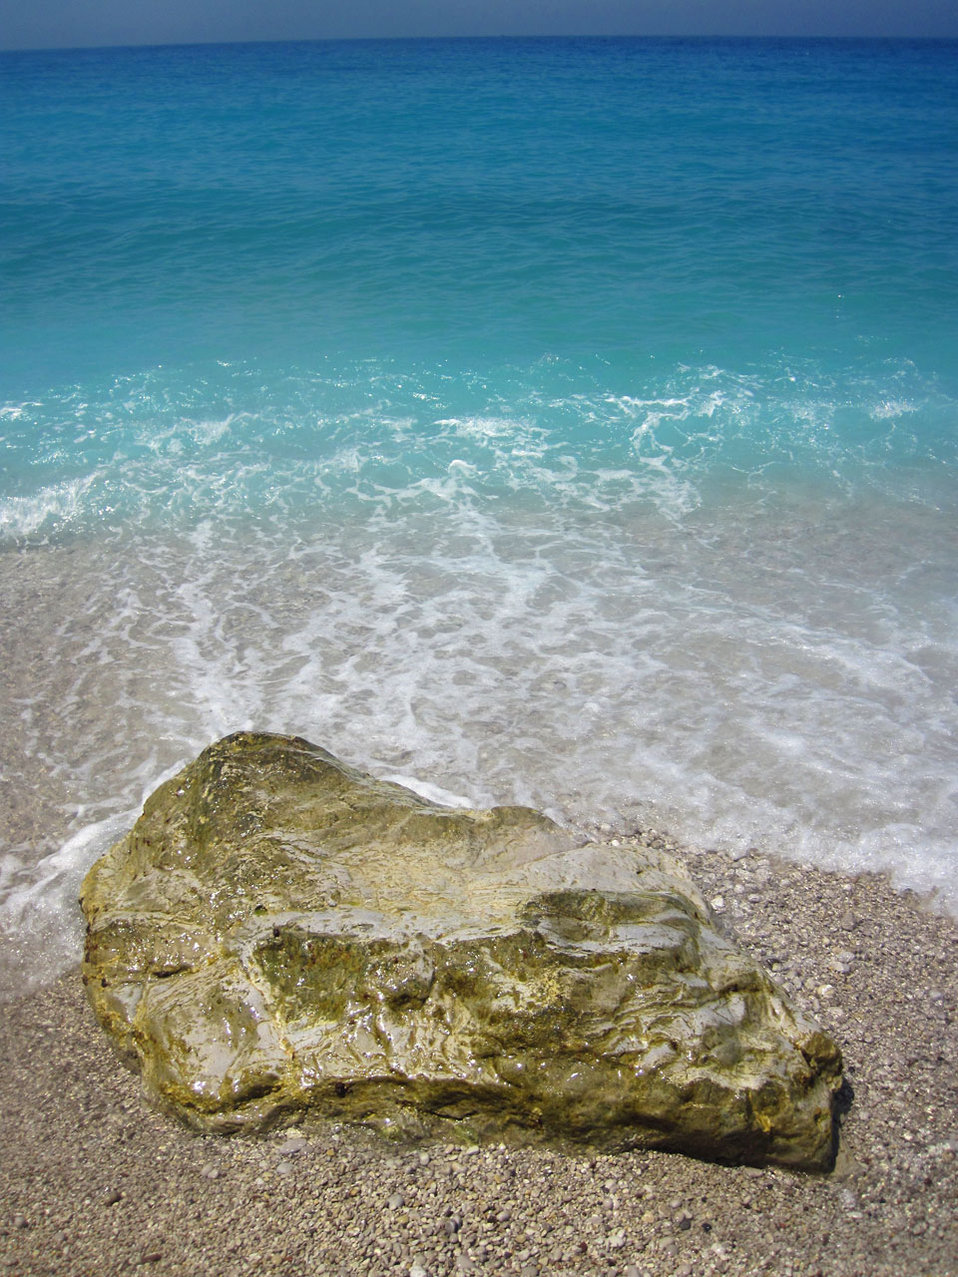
Large rock on beach

Large piece of rock on beach with sea in the background.